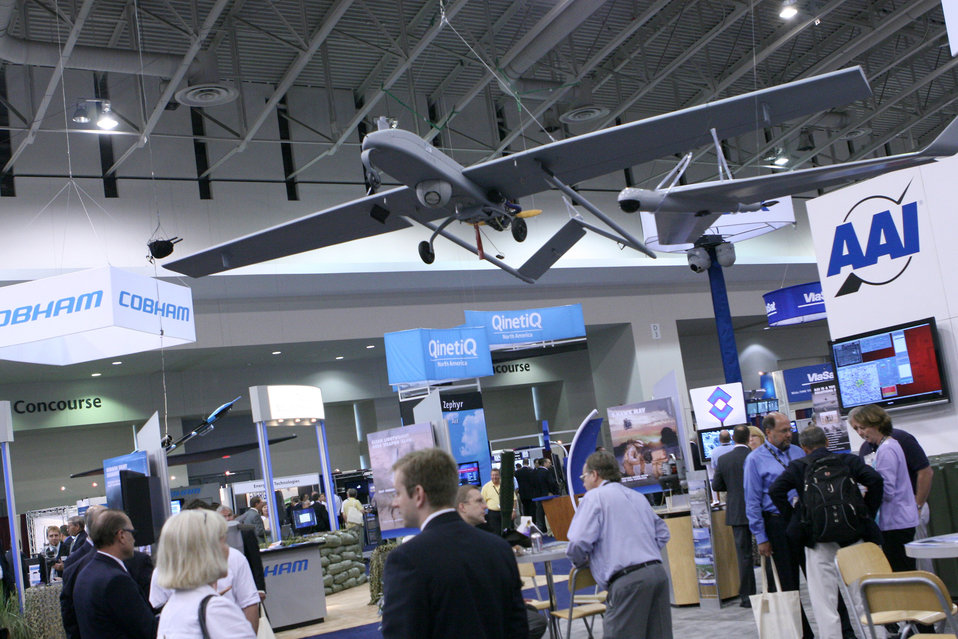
Convention showcases unmanned capabilities

An unmanned aircraft surveillance system is displayed during the Association for Unmanned Vehicle Systems International Unmanned Systems North America 2009 Convention Aug. 11 at the Washington, D.C., Convention Center. More than 5,000 people attended the four-day conference and exhibit to see the more than 320 unmanned aerial, maritime and ground systems on display.